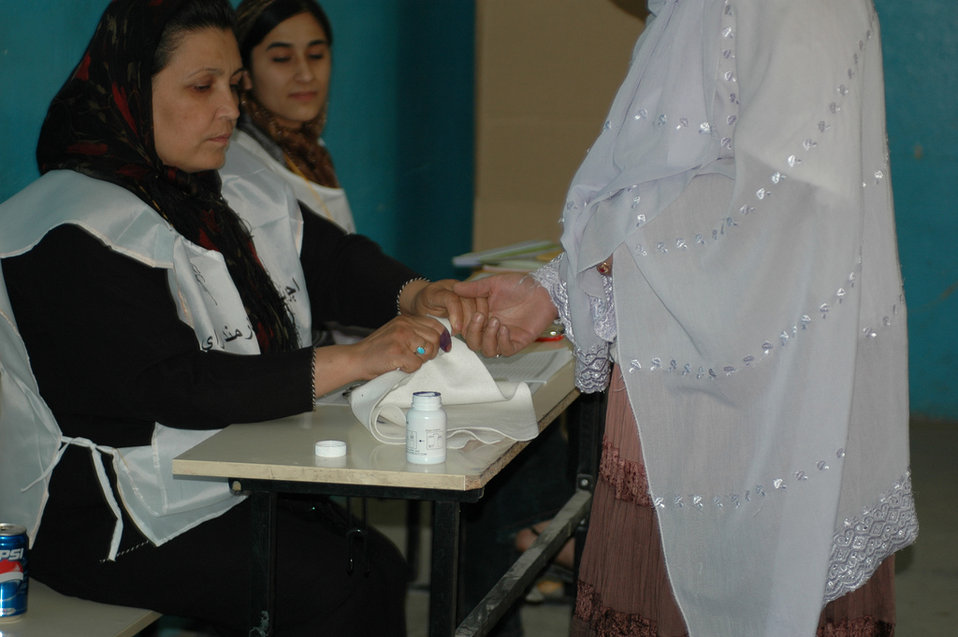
Inking finger 2